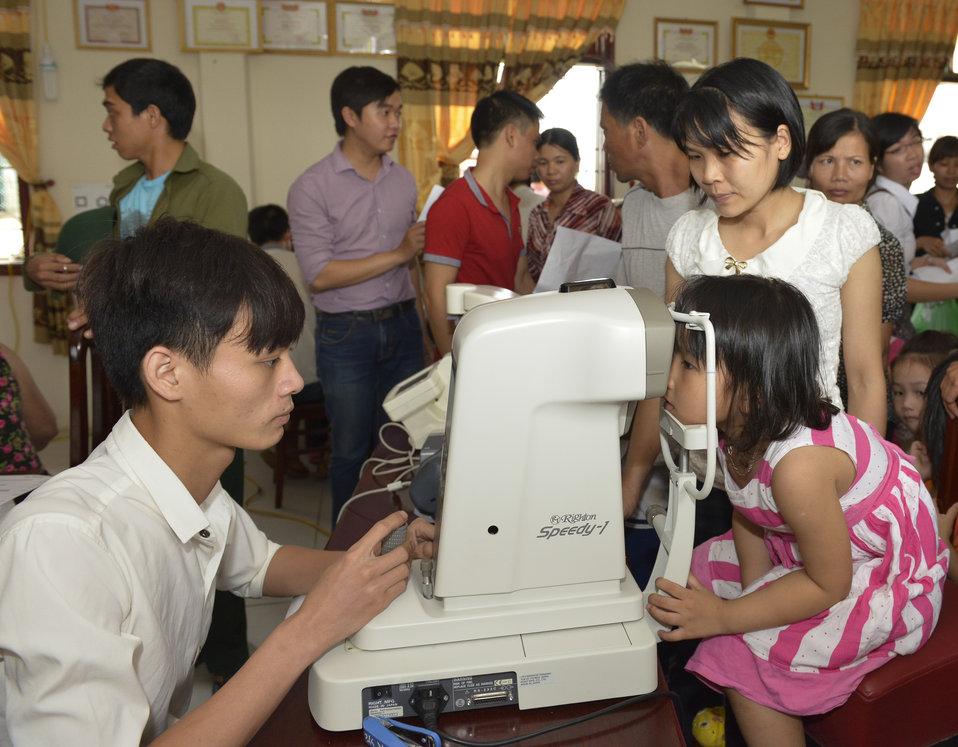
Eye screening for kindergarten children in Quoc Oai district of Hanoi

Quoc Oai, Hanoi. May 31, 2014.